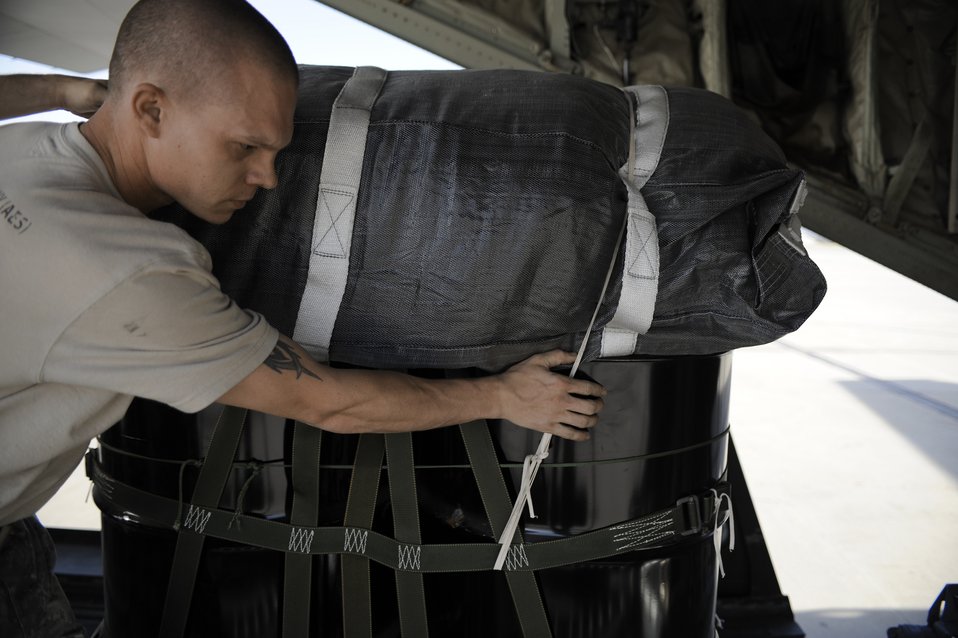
Airdrop fuels austere Afghan locations

Army Sgt. Joseph Brack guides a pallet into the cargo bay of a C-130J Super Hercules, in preparation for a night airdrop to deliver JP-8 fuel to troops on the ground July 17 over southwestern Afghanistan. Sergeant Brack is assigned to the 612th Quartermaster Company.